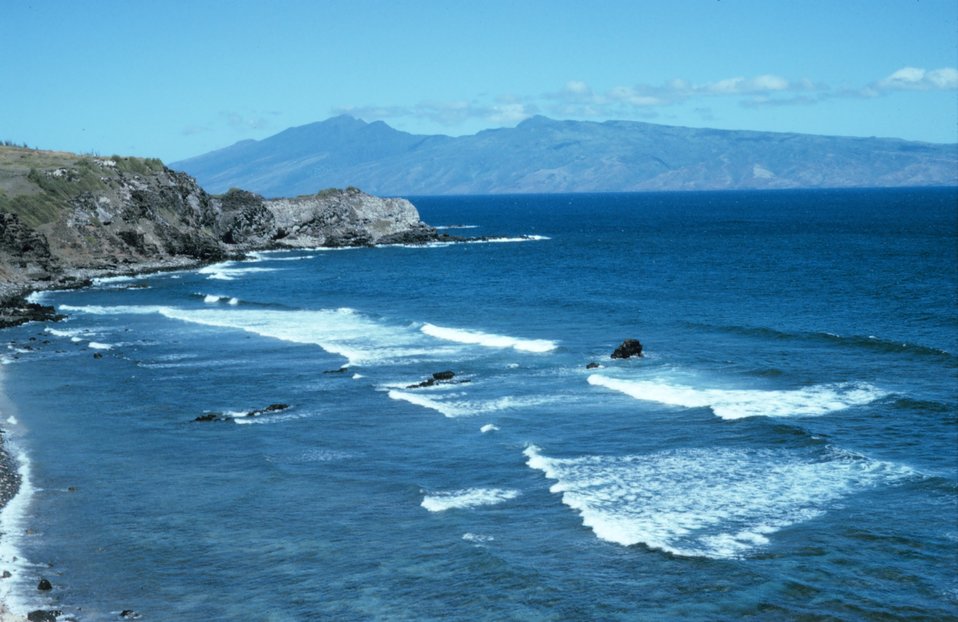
Hawea Point